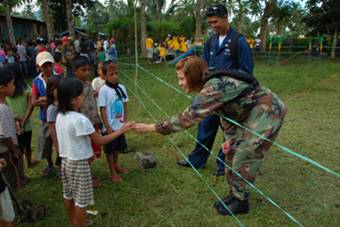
Pacific partnership mission

Tech. Sgt. Angela Custerand and Navy Corpsman 2nd Class Francis Asuncion give candies to Filipino children May 31 in Maguindanao, Philippines. The medical team visited the district of Matanog, Maguindanao, and provided free medical and dental care to people in need. The U.S. Navy and Air Force are deployed aboard the USNS Mercy for Pacific Partnership 2008, providing care and assistance to the people of the region. Sergeant Custer is from Cannon Air Force Base, N.M.